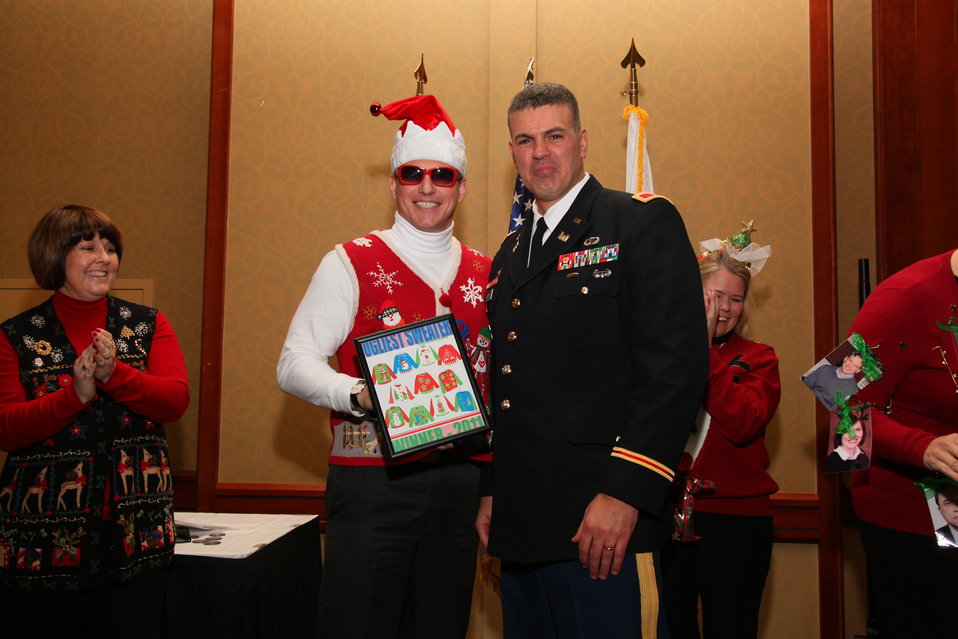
Sacramento District Holiday Party 2011